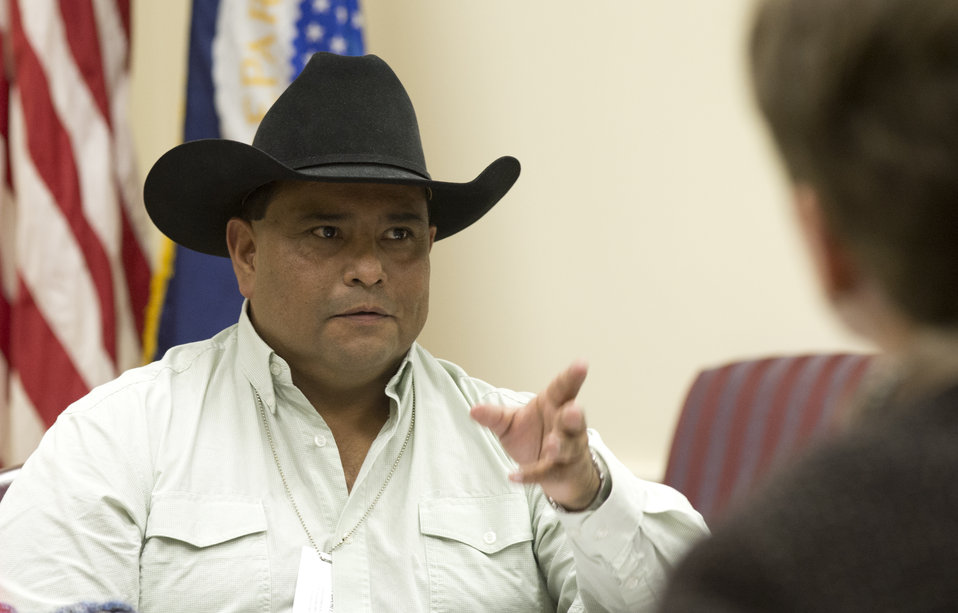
Native American Farmers and Ranchers Chairman Mark Wadsworth speaks at the Agriculture, Community and Economic Development Opportunities in Indian Country with Agriculture with tribal leaders at a roundtable discussion held at the U.S. Department of Agriculture (USDA) in Washington, D.C. on Tuesday, Nov. 12, 2013.